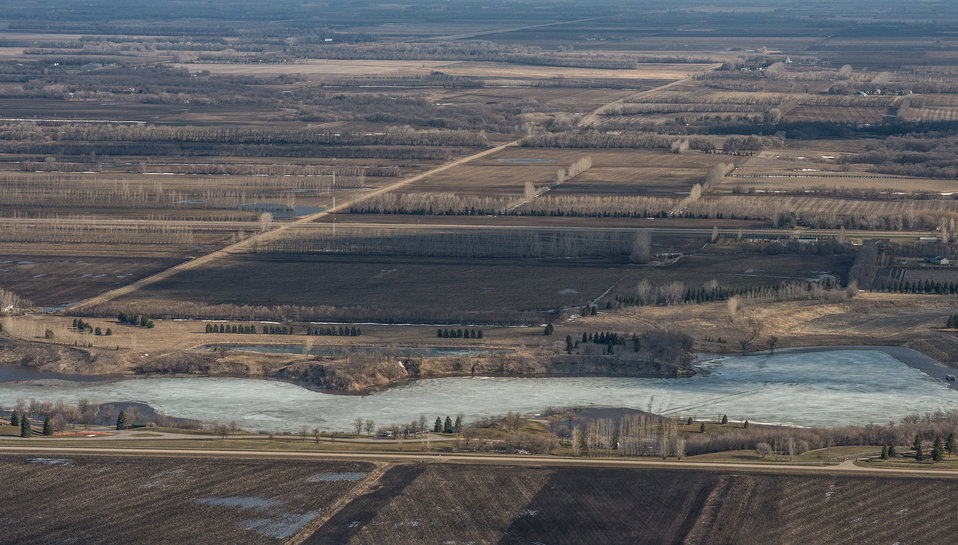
Larimore Dam, a Public Law PL83-566 Small Watershed Program, in Grand Forks County, ND, on Wednesday, May 1, 2013.